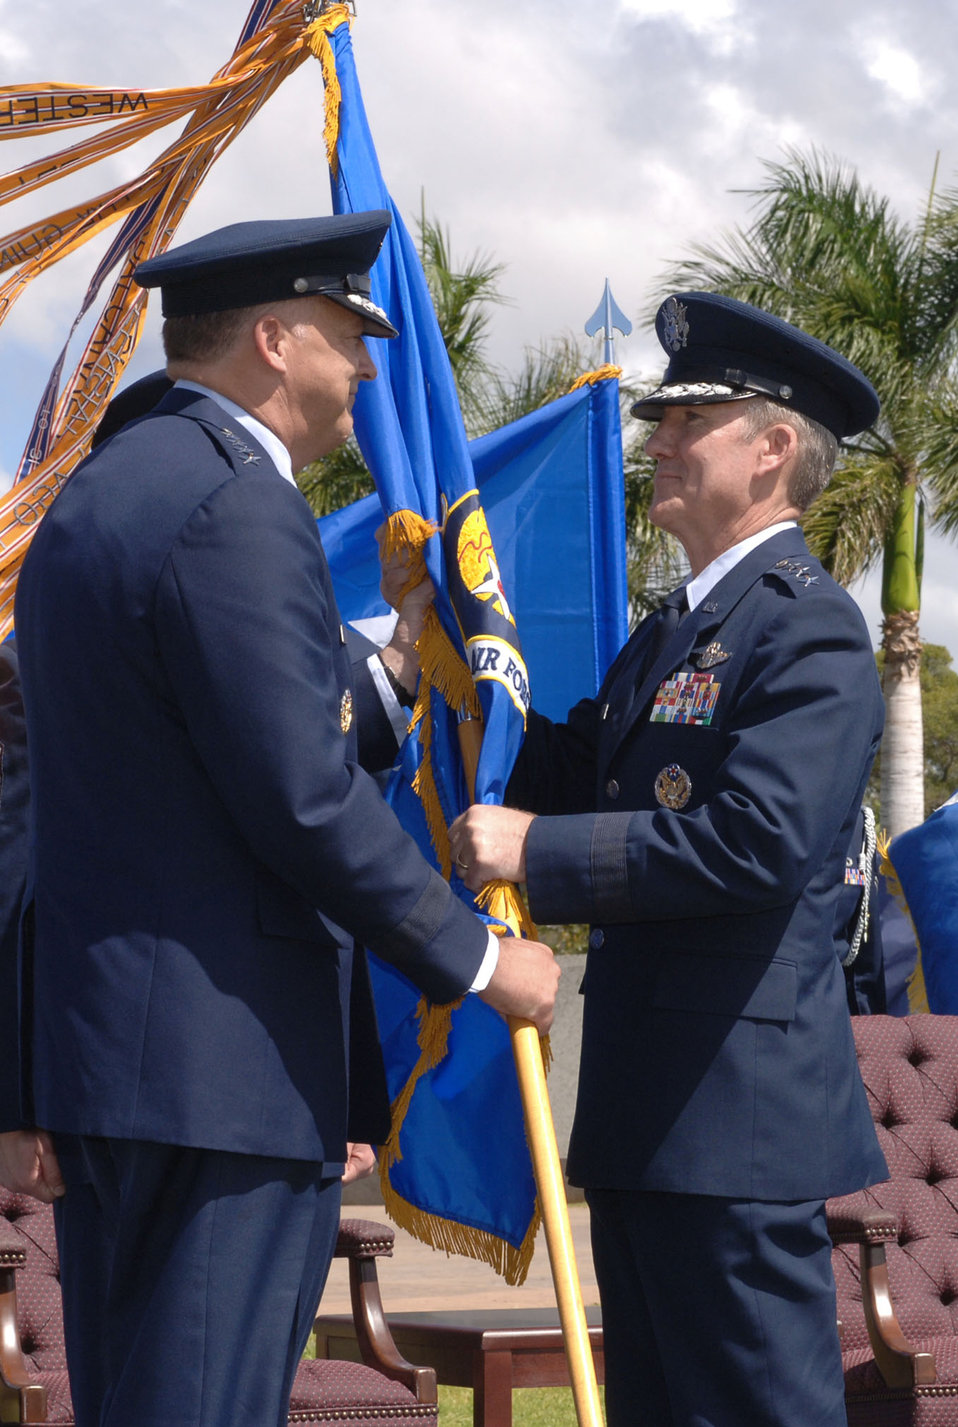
13th Air Force officials welcome new commander

Gen. Gary North passes the 13th Air Force unit flag to Lt. Gen. Herbert J.